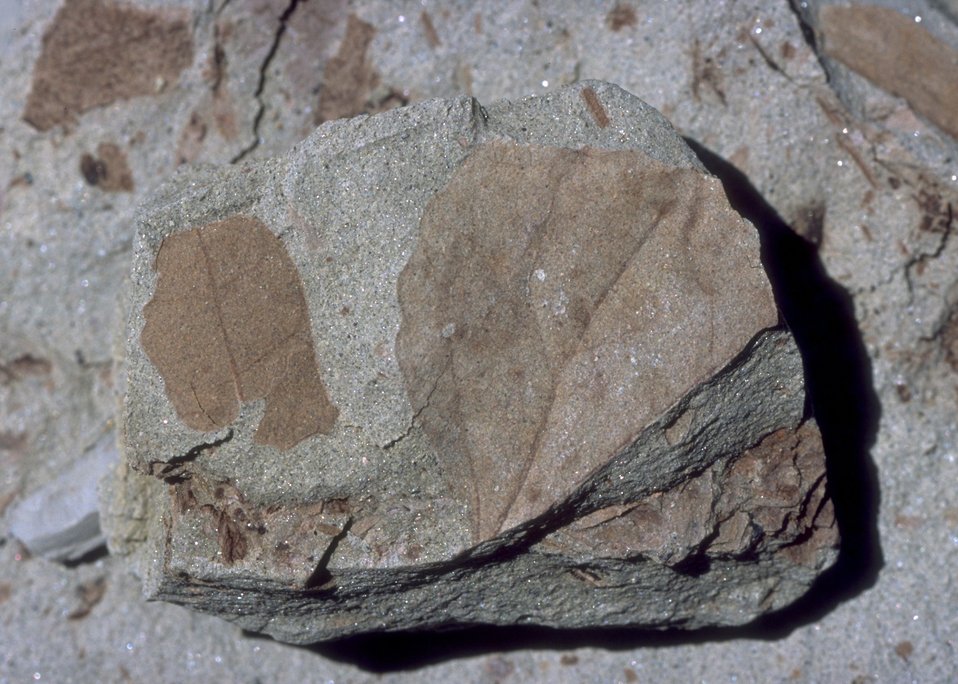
Close up of fossil vegetation, Cedar Ridge Paleo area, Worland Field Office.